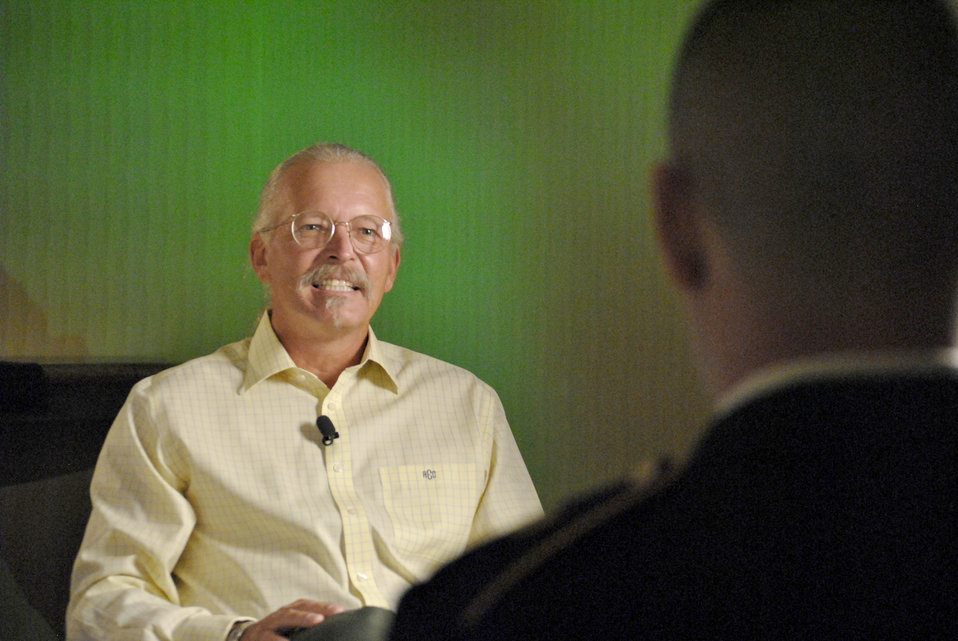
Chief Etchberger - Medal of Honor

Richard Etchberger reflects on growing up as the son of Chief Master Sgt. Richard Etchberger, who was posthumously awarded the Medal of Honor during a ceremony Sept. 19, 2010, at the White House.